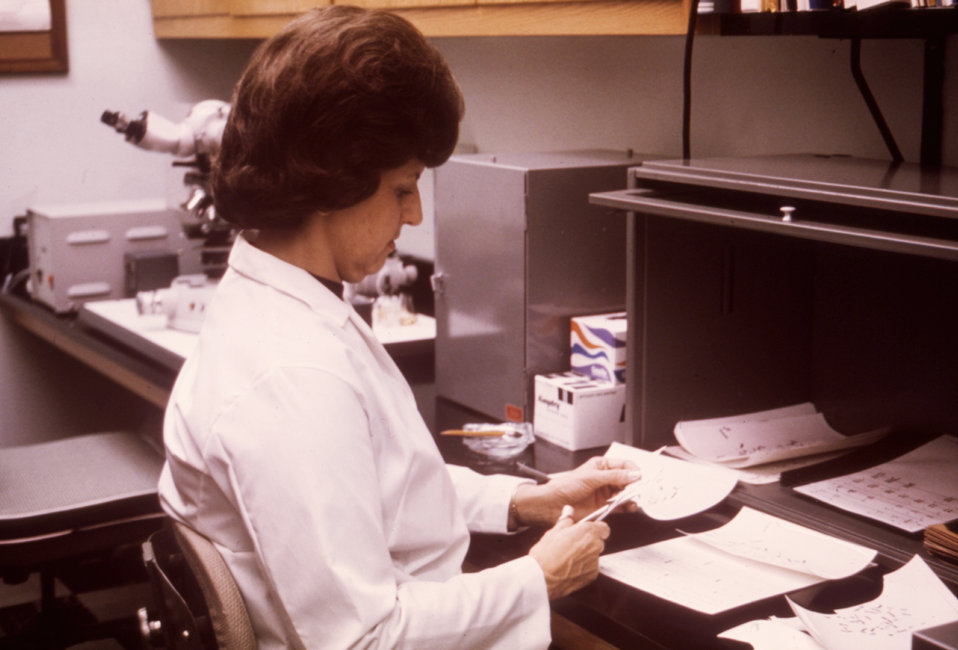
This lab technician is shown cutting apart the karyotype profiles derived from amniotic fluid cell culture.